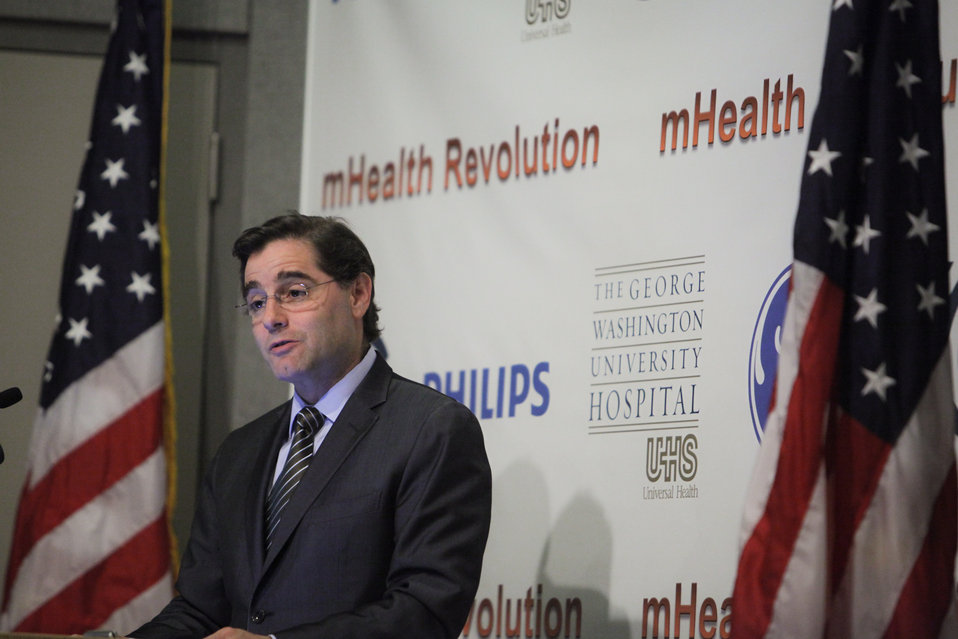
FCC Chairman Genachowski Speaks at GW University Hospital About MBANs

FCC Chairman Genachowski speak about MBANs to Medical Industry at George Washington University Hospital in Washington, DC.

May 17, 2012.